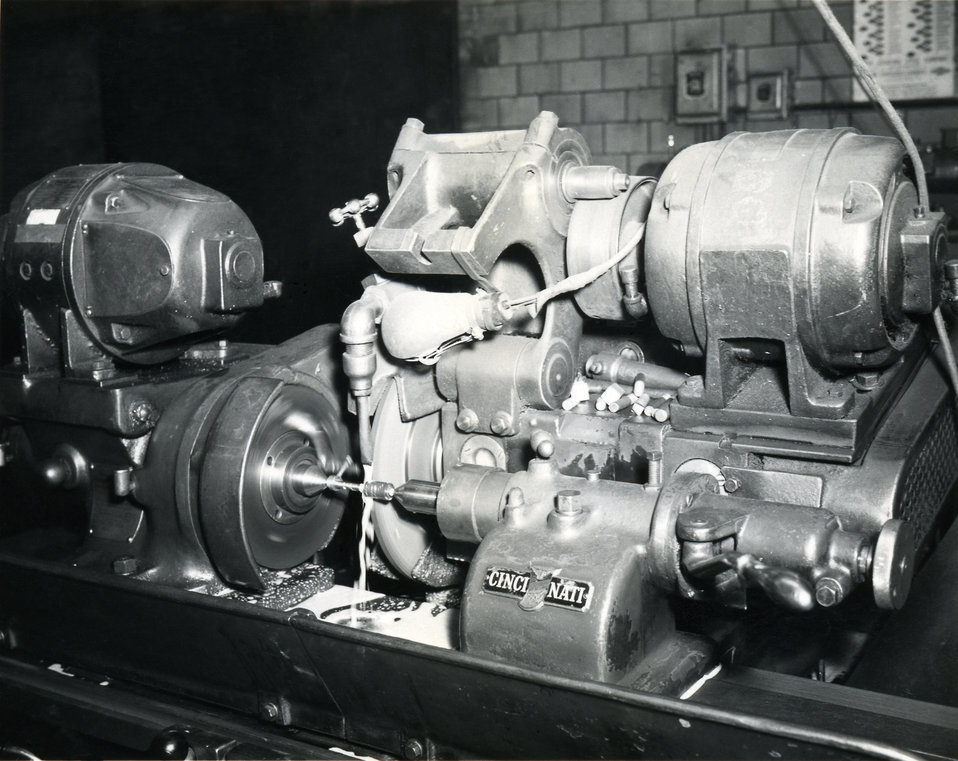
This 1950s historical photograph was provided by the Center for Disease Control's (CDC), National Institute for Occupational Safety and Health (NIOSH). The image depicted 'cutting oil', a type of metalworking fluid used to facilitate the cutting action of a cutting blade by lubricating the edge of the blade, as the oil was flowing unto the blade, and subsequently drained away. This activity was taking place in a tungsten carbide plant, and revealed the potential for the fluid to be sprayed in a haphazard manner, which warranted concern on behalf of any workers associated with the use of this machine to exposure to this cutting fluid. Activities such as this need stringent oversight by a regulating body such as NIOSH, which would make the health and welfare of such workers a paramount concern.